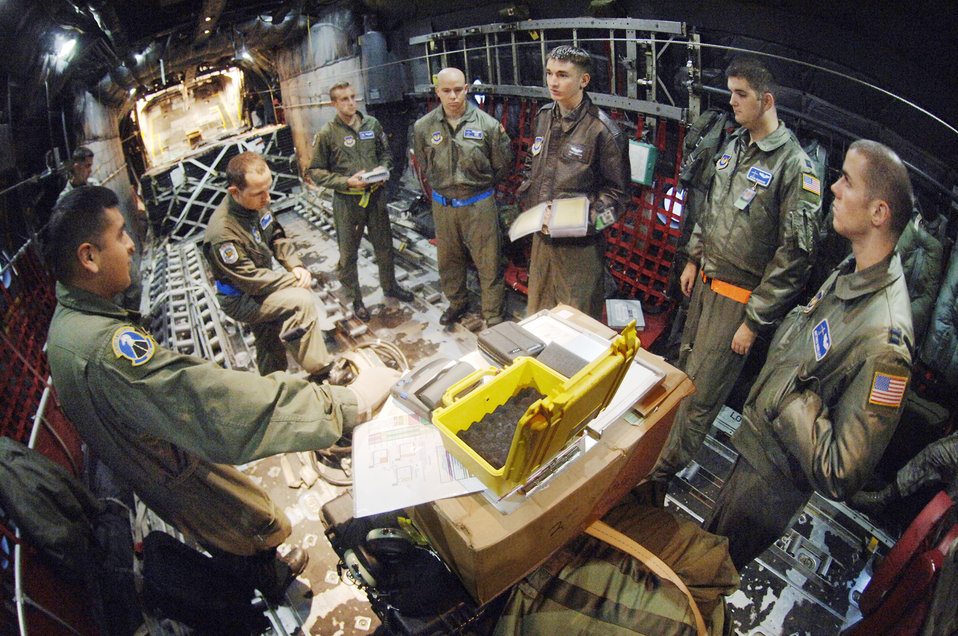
C-130 arrival in Poland marks end, new beginning

Capt. Tyler Robertson (in a leather jacket) leads a mission brief for (right to left) Capt. Matthieu Rigollet, Capt. Ryan Donohoe, Staff Sgt. Eric Kleser, Capt. Matt Schoomaker, Staff Sgt. Josh Woolridge and Staff Sgt. Victor Reynosa discuss their C-130 Hercules mission Nov. 2, 2009. The aircraft was transferred to the Polish air force's 14th Airlift Squadron at Powidz Air Base, Poland, as part of a program for building partnership capacities between the United States and its allies. Captain Robertson is an aircraft commander, Captain Rigollet is a mission navigator, Captain Donohoe is an instructor navigator, Sergeant Kleser is a flight engineer, Captain Schoomaker is a co-pilot, and Sergeants Woolridge and Reynosa are loadmasters.